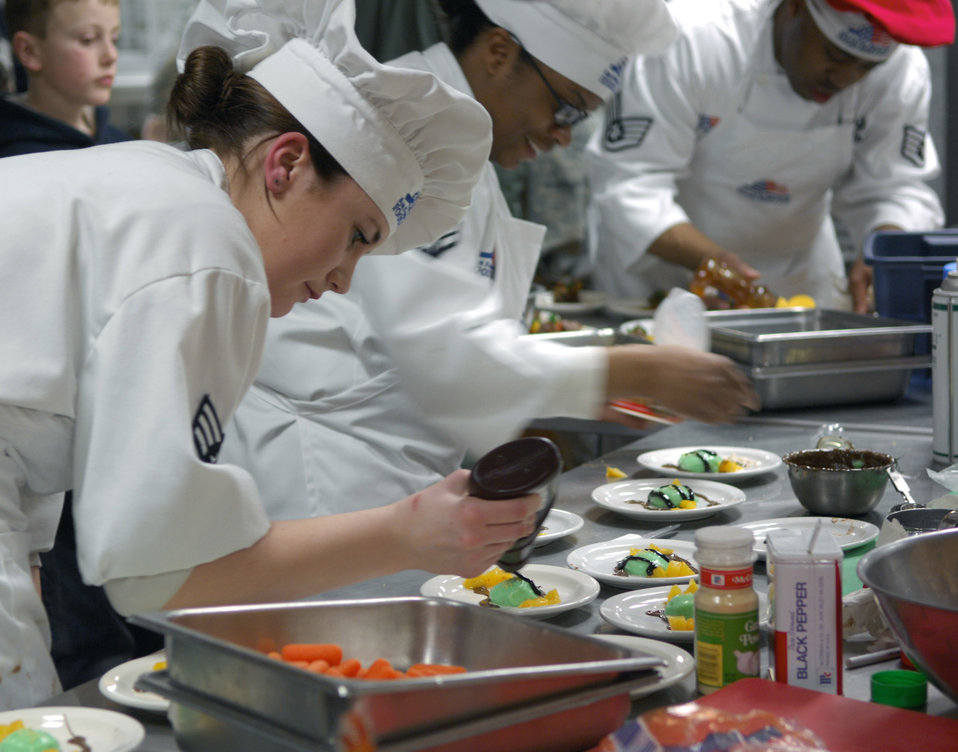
A touch of chocolate...

Chefs Senior Airman Natasha Mathews (left), Airman 1st Class Qushondra Owens and Staff Sgt. Cory Upshaw dress pistachio puddings during a chef challenge at Minot Air Force Base, N. D. In the challenge, two teams battle to prepare a meal without knowing the ingredients ahead of time.